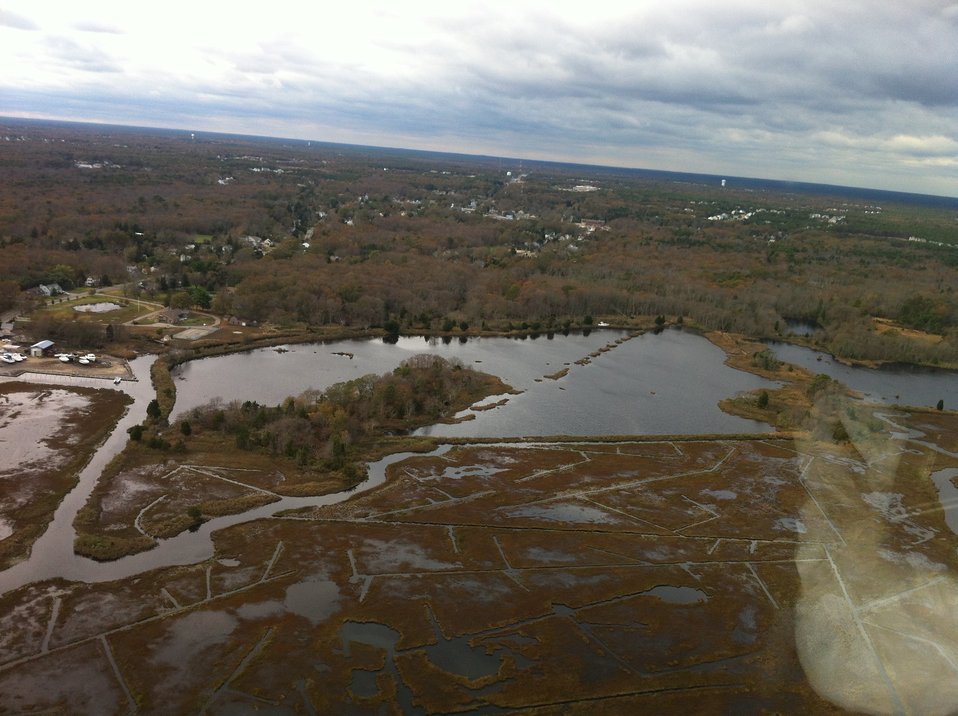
Aerial photo of Barnegat impoundment at Edwin B. Forsythe National Wildlife Refuge (NJ)

Barnegat impoundment has a boat in it (NJ)